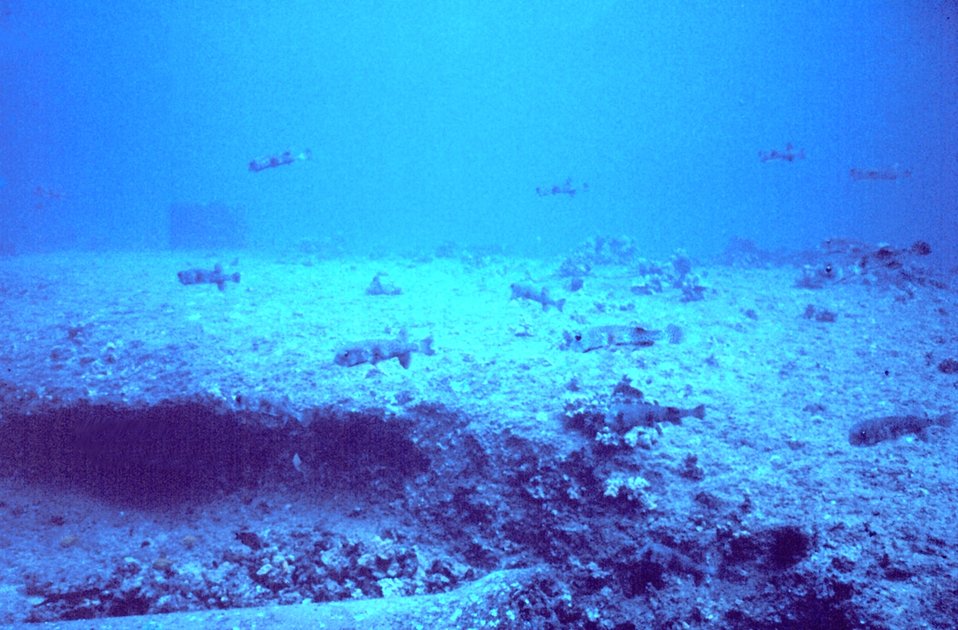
Large school of the spiny puffer, Diodon hystrix, in the deepest part of the artificial reef at approximately 90 ft.